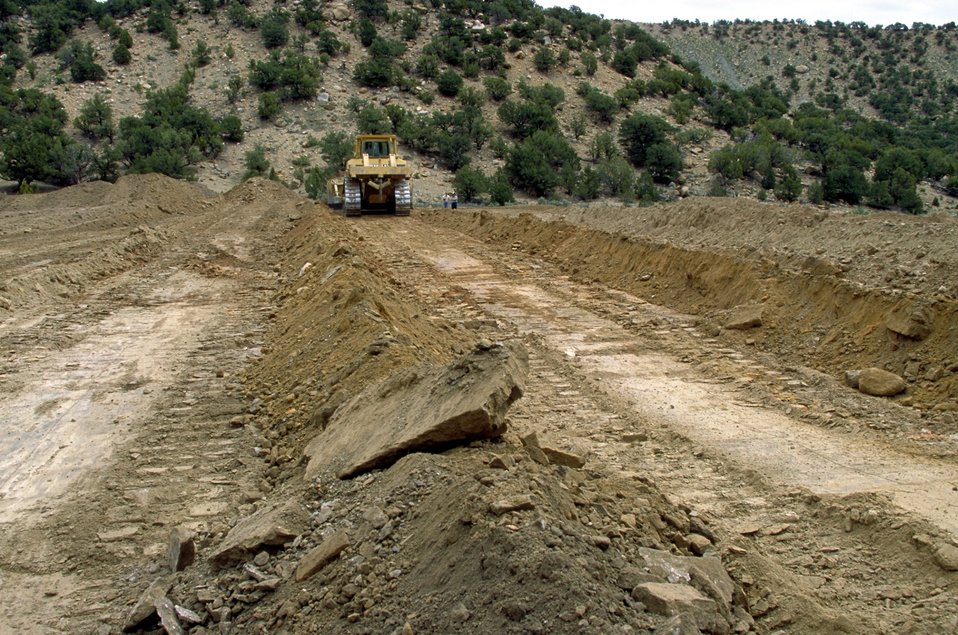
Building a drill pad for coal bed methane production near price, Utah.